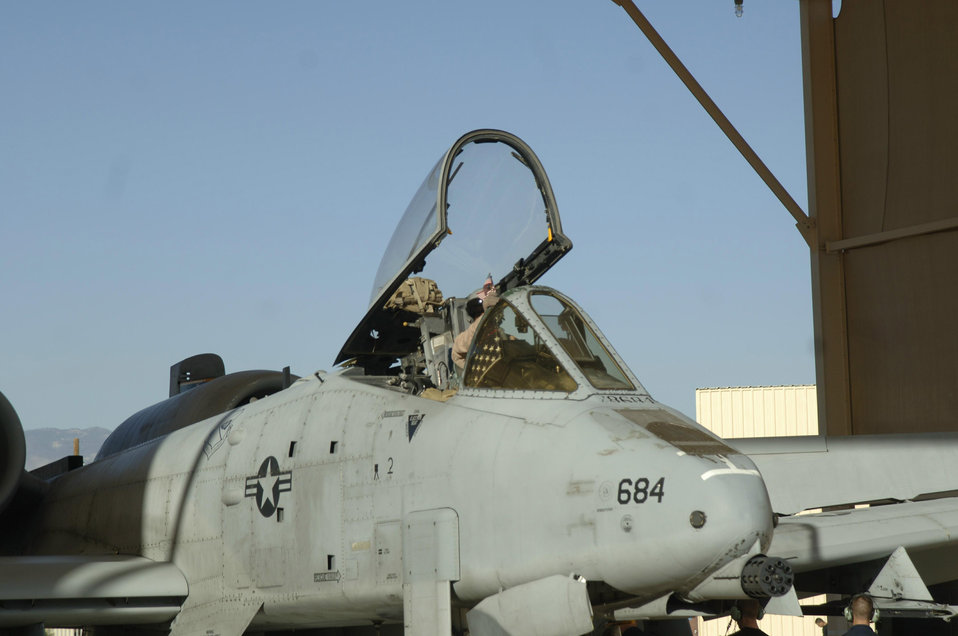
Welcome home

DAVIS-MONTHAN AIR FORCE BASE, Ariz. (AFPN) -- Capt. Jay Annis prepares to disembark his A-10 Thunderbolt II Feb. 10. Captain Annis, assigned to the 354th Fighter Squadron, was deployed to Bagram Air Base, Afghanistan, in support of Operation Enduring Freedom.